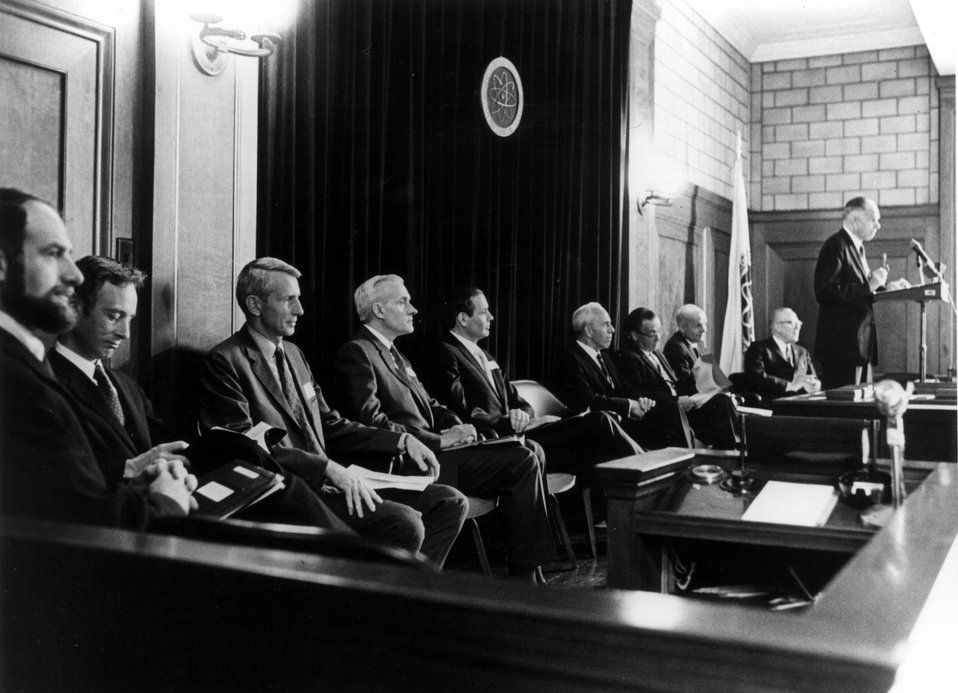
THE AEC 1970 E.O. LAWRENCE MEMORIAL AWARD was presented to five U.S. scientists on May 28, 1970, in ceremonies at the National Academy of Sciences in Washington, D.C. The 1970 awardees were left to right: Dr. Andrew M. Sessler, Lawrence Radiation Laboratory, Berkeley; Dr. Michael M. May, Lawrence Radiation Laboratory, Livermore; Dr. Joseph M. Hendrie, Brookhaven National Laboratory; Dr. William J. Bair, Pacific Northwest Laboratory; and Dr. James W. Cobble, Professor of Chemistry, Purdue University. Commissioners Johnson, Ramey, Thompson, and Larson are seated; Dr. Seaborg, and the AEC Chairman is at the speaker's stand.